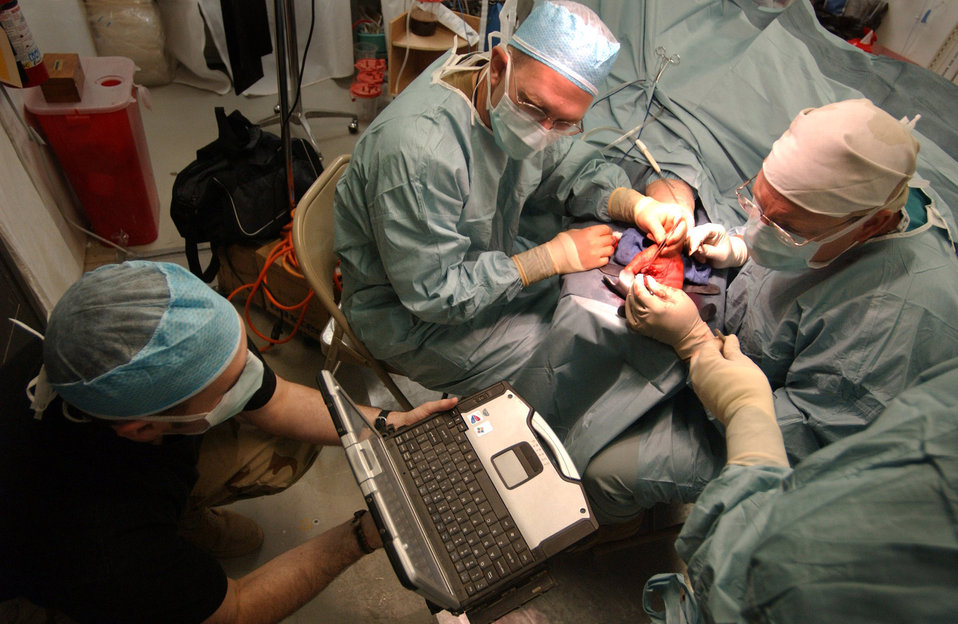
Fix 'em up, send 'em out

BAGHDAD, Iraq -- Senior Airman Julian Cuy (left) shows laptop computer screen shots of a Soldier's severe arm fracture to Maj. (Dr.) Jeffery Parker (center) and Maj. (Dr.) Patrick Miller as they perform reconstructive hand surgery on the Soldier, who suffered a high velocity gunshot wound. The Soldier was then airlifted to the Air Force theater hospital at Balad Air Base, Iraq. The Airmen are assigned to the 447th Expeditionary Medical Squadron.